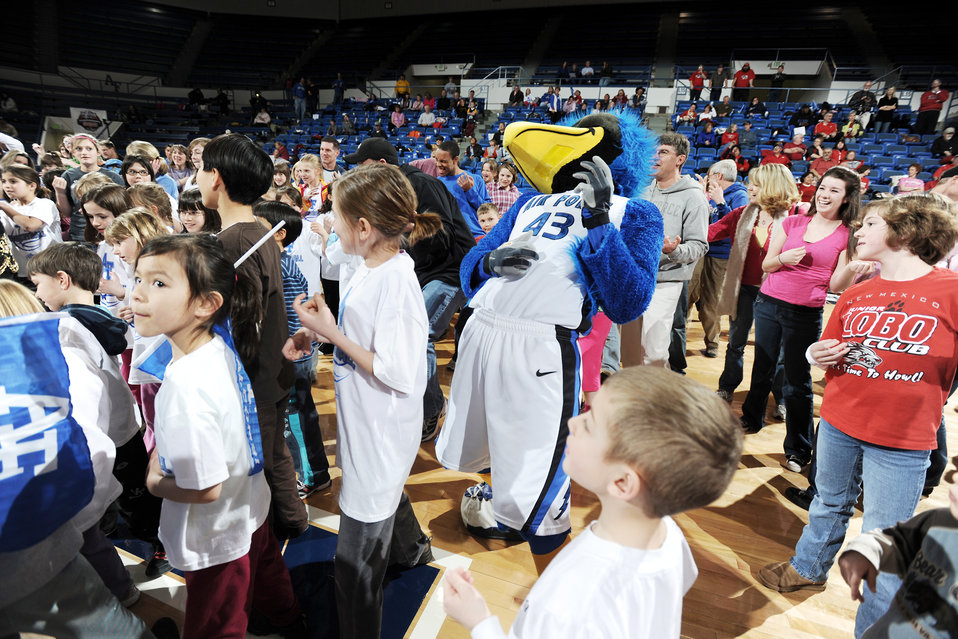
Photo essay: Academy women?s basketball falls to New Mexico

The Bird, the official mascot of the U.S. Air Force Academy, plays air guitar with the fans at the Academy women?s basketball as part of an attempt to break the world group air guitar record Feb. 20, 2010, at Clune Arena in Colorado Springs, Colo. While there were 956 air guitarists participating at the game, they were not able to break the record of 1,436 set by the University of Ontario, Canada.